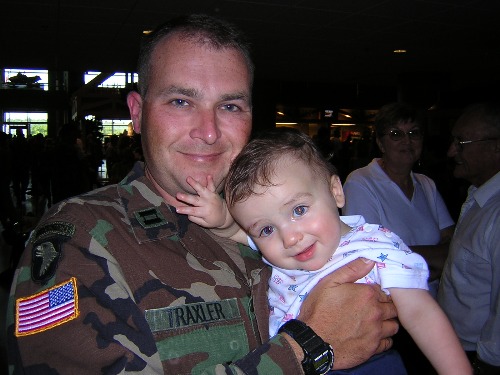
Chuck Traxler, Deputy Assistant Regional Director for External Affairs in Region 3, served in the Army.